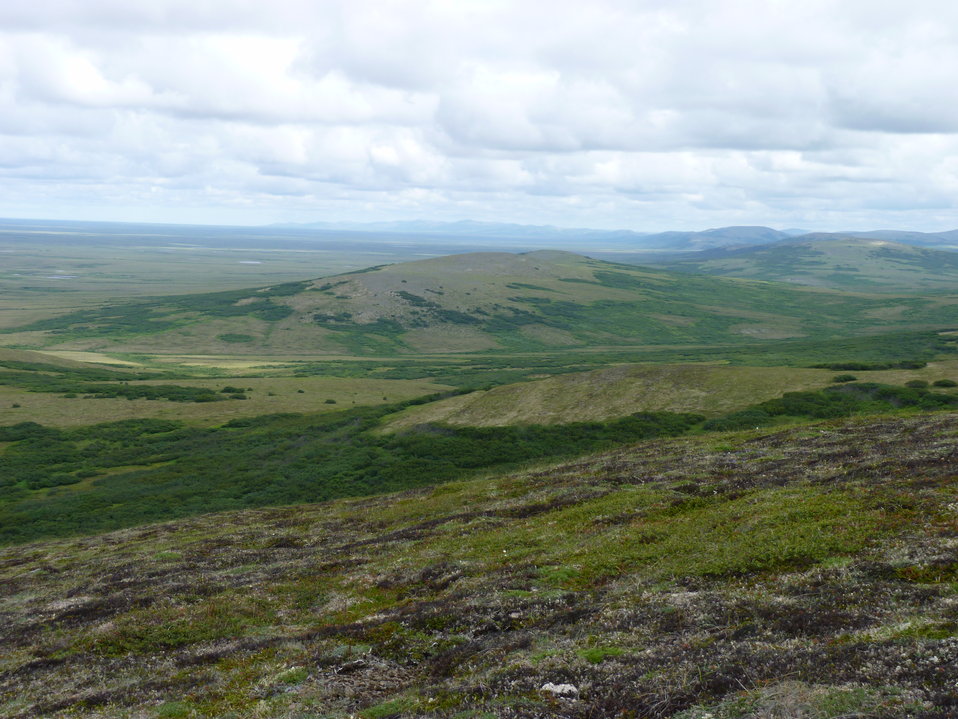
Andreafsky Wilderness, Yukon Delta National Wildlife Refuge